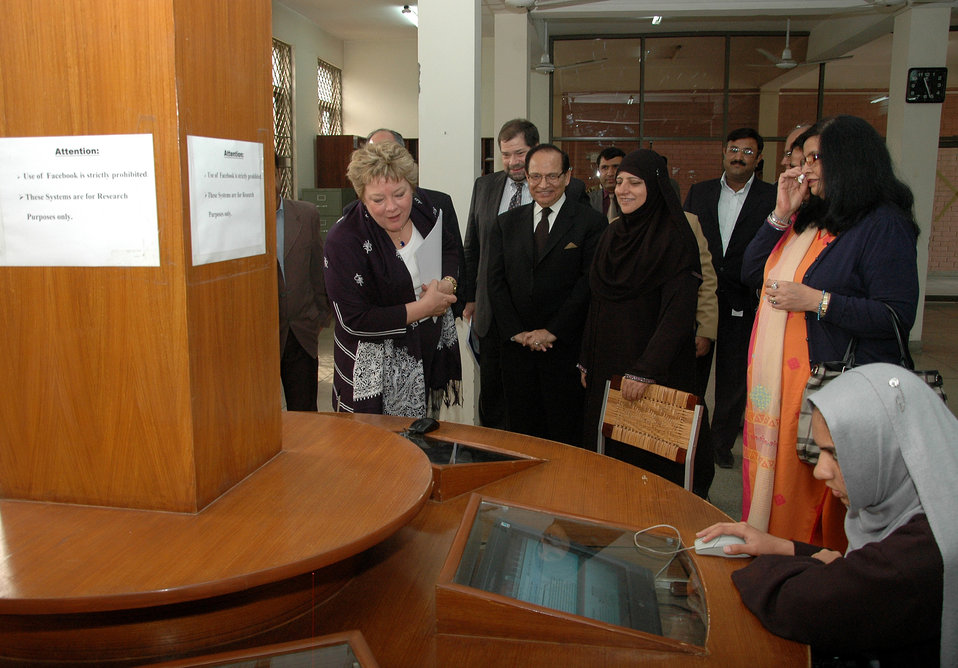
Pre-Service Teachers Education Program (Pre-STEP)

Lahore, February 21, 2012 - Deputy Mission Director USAID/Pakistan, Ms. Karen Freeman with faculty members and students of IER, University of the Punjab.